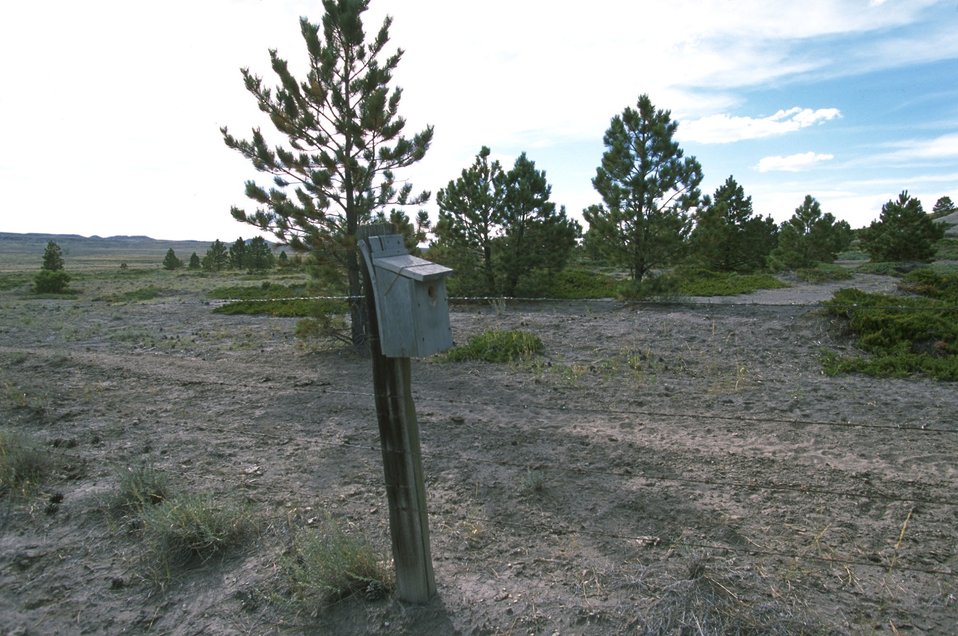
Acid Shale Area of Critical Environmental Concern (ACEC)